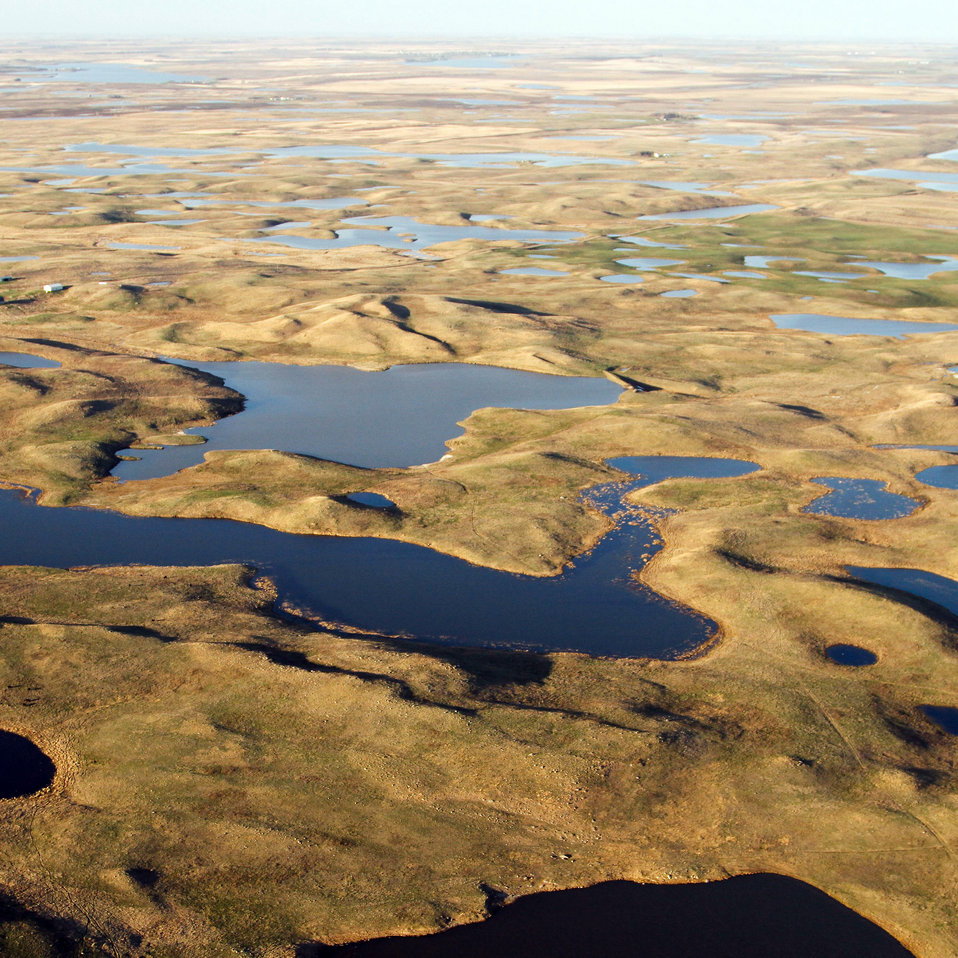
Plains and Prairie Potholes LCC

Prairie potholes